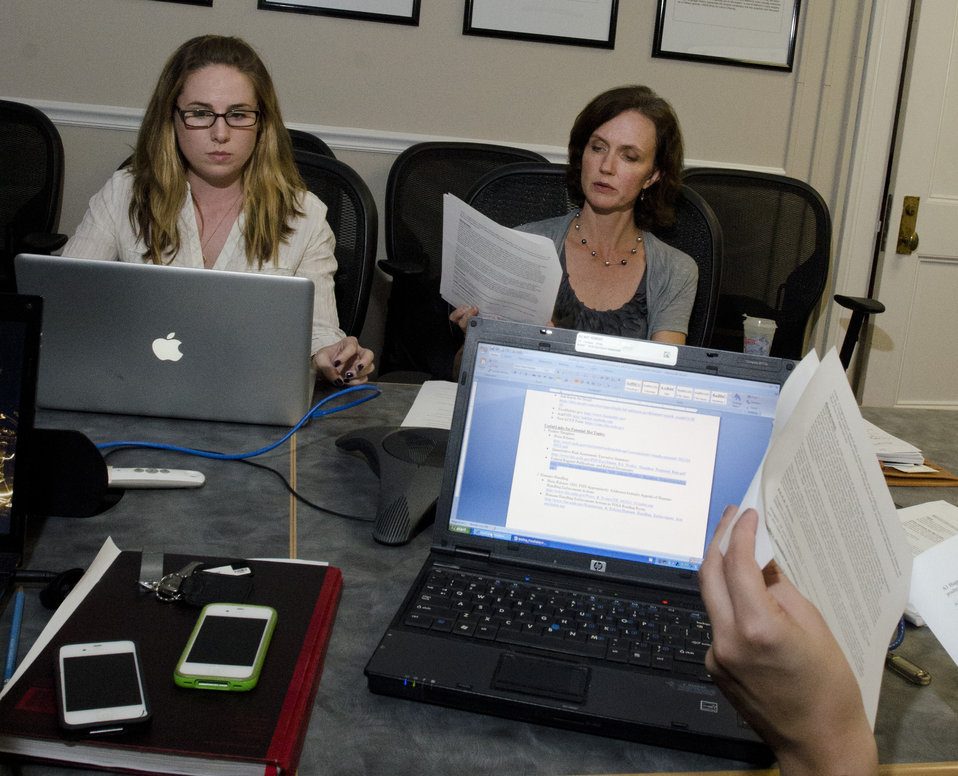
Dr. Elisabeth Hagen, Under Secretary for Food Safety and Inspection Service, (right) assisted by Web Communications Director Amanda Eamich, holds virtual office hours on Twitter for 'It’s National Food Safety Education Month!' on Thursday, September 27, 2012 at the U.S. Department of Agriculture in Washington, D.C.